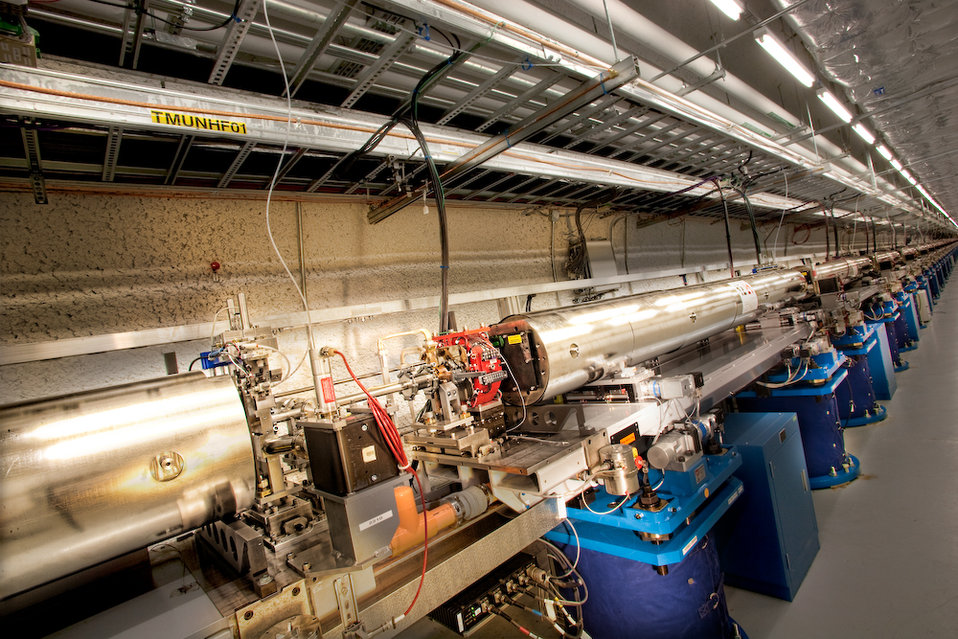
Only 12 out of a total 33 Linac Coherent Light Source (LCLS) undulator magnet are needed to create the first pulse of laser light.

The LCLS offers researchers the first-ever glimpse of high energy or 'hard' x-ray laser light produced in a laboratory. It will provide the world's brightest, shortest pulse of laser x-rays for scientist study. It will give scientists an unprecedented tool for studying and understanding the arrangement of atoms in materials such as metal, semiconductors, ceramics, polymers, catalysts, plastics and biological molecules, with wide-ranging intact on advances energy research and other fields.